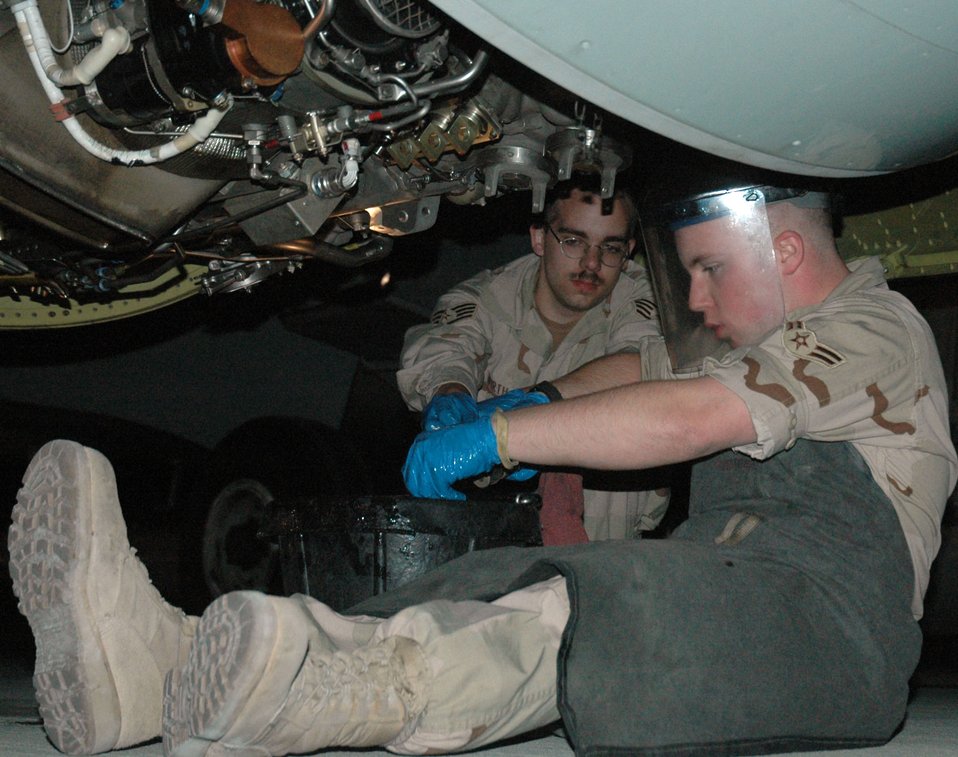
379th fights GWOT 24/7

Staff Sgt. Daniel Wirth oversees Airman 1st Class Christopher Clement as he inspects the chip detectors in the oil system of an RC-135 Rivet Joint aircraft during the post-flight inspection. Chip detectors are magnets that locate abnormal wear by picking up metal particles. Both are assigned to the 379th Expeditionary Aircraft Maintenance Squadron.